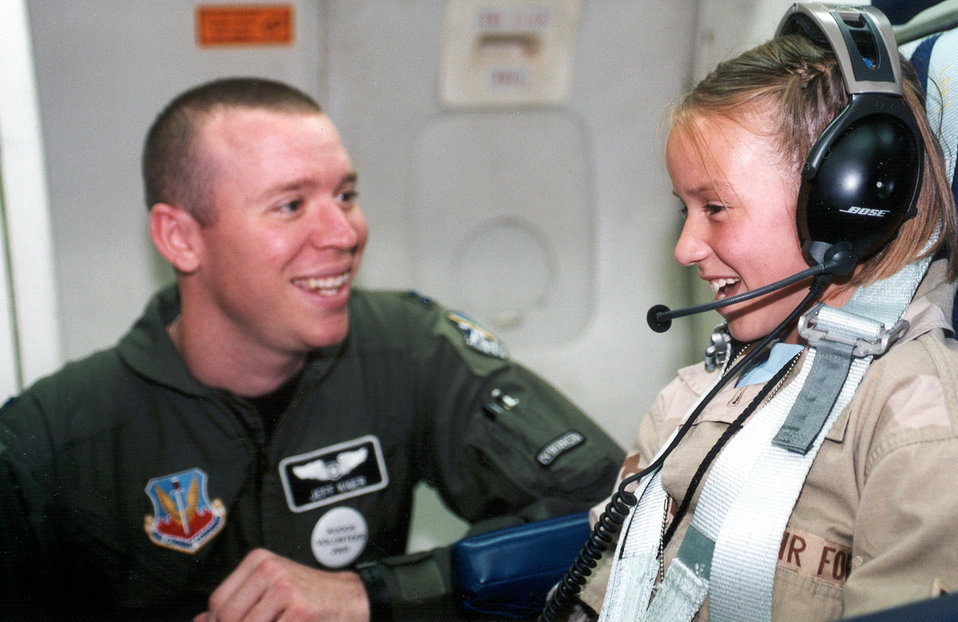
Pilot in training

TINKER AIR FORCE BASE, Okla. -- Checking out communications aboard an E-3 Sentry here, 9-year-old Erin Trace is assisted by Capt. Jeff Kiger. The aircraft tour was part of deployment activities 150 children had the opportunity to experience May 14 during Operation Kids Understanding Deployment Operations. Captain Kiger is assigned to the 960th Airborne Air Control Squadron.